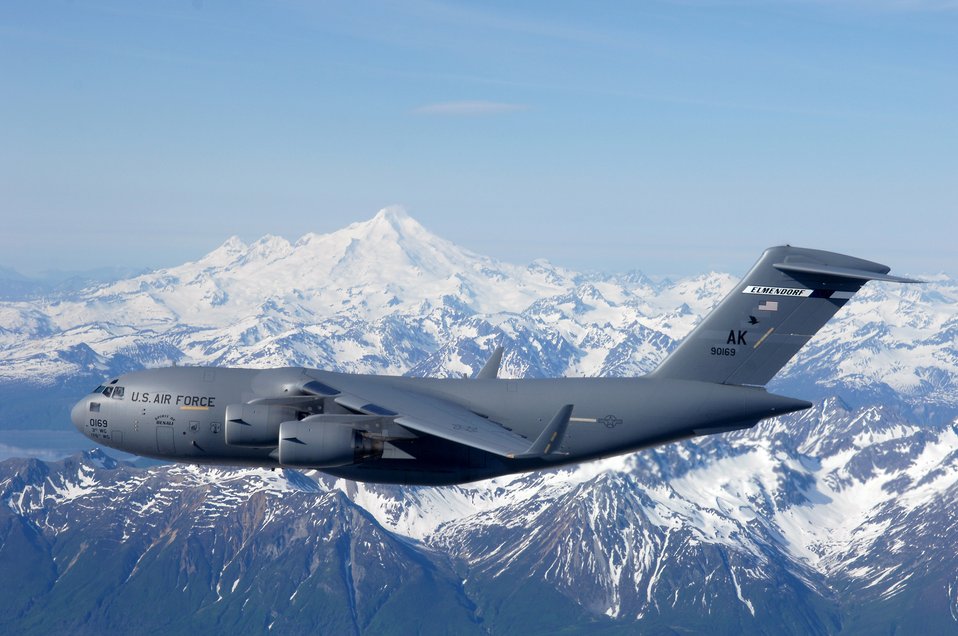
Elmendorf celebrates C-17 arrival

The first of eight C-17 Globemaster IIIs was delivered June 11 to Elmendorf Air Force Base, Alaska. This aircraft, named